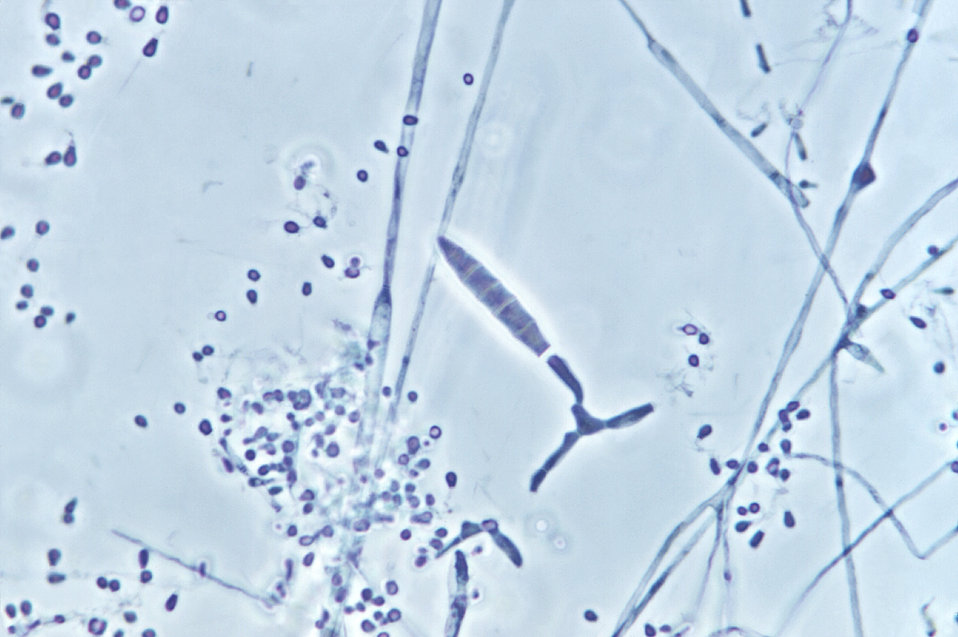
Magnified 500X, this photomicrograph revealed some of the ultrastructural morphology exhibited by the fungal organism, Microsporum persicolor. In this particular image details seen in both a centrally-located macroconidium, and numerous, single-celled microconidia are revealed. Both of these structure types are the asexual spores that originate from the filamentous conidiophore, and are also known as mitospores, for they are born out of the process of mitosis, and are therefore, haploid when they reach maturity. Unlike the single-celled microconidia, the M. persicolor macroconidia are composed of multiple, attached microconidia, separtated by cell walls, and configured in a cigar-shaped chain.